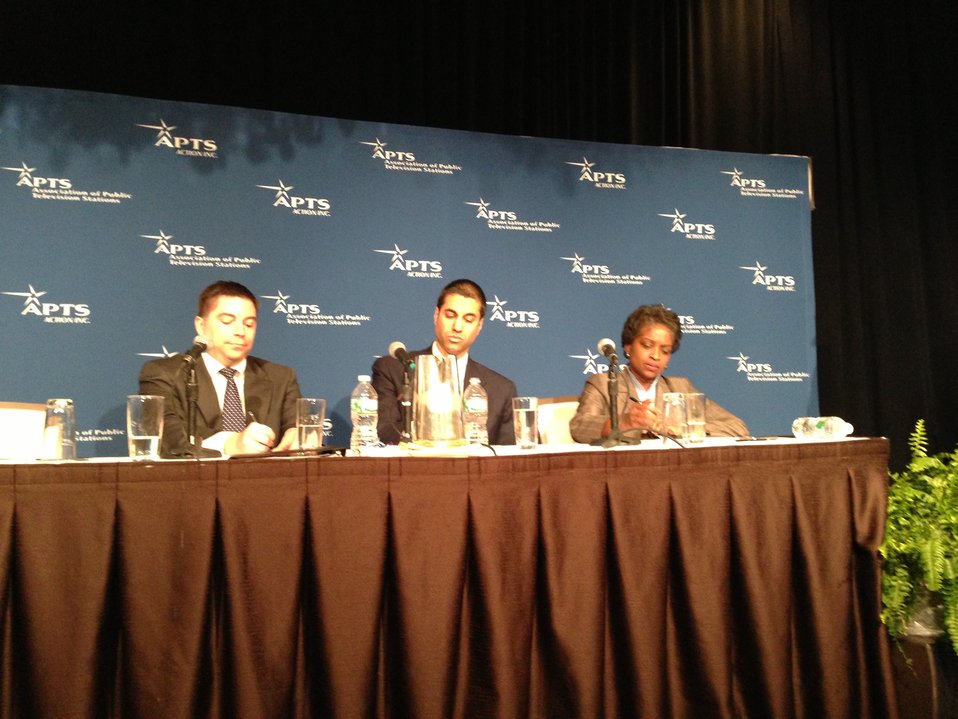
2.24.2014 APTS Public Media Summit

Commissioners O'Rielly, Pai and Clyburn participate on panel at APTS Public Media Summit February 24, 2014